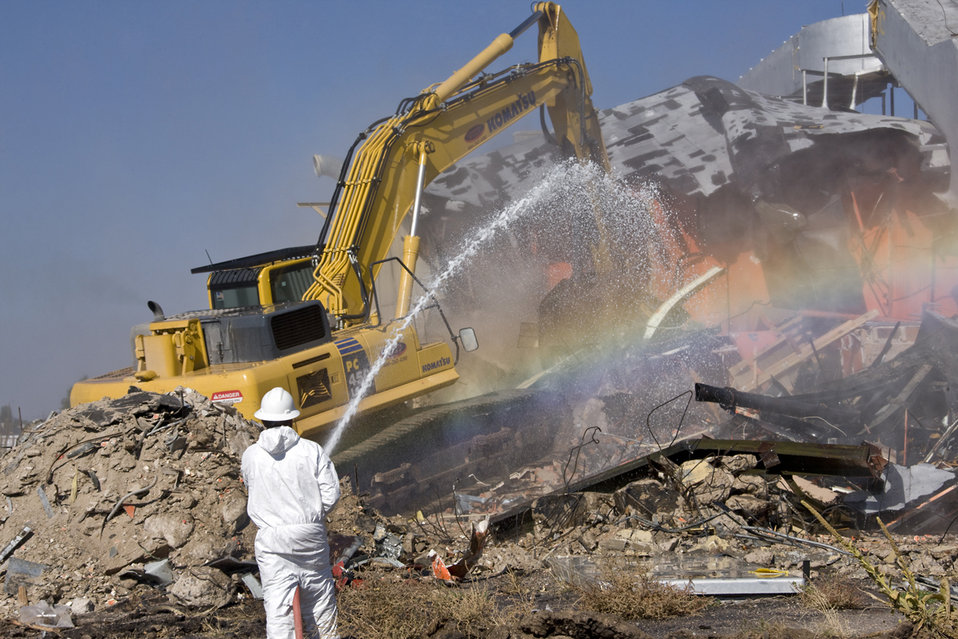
Environmental Management at Los Alamos National Laboratory

A worker suppresses dust during the final demolition stages of the historic DP West site, located at Los Alamos National Laboratory’s (LANL) Technical Area 21. The demolition was funded by the American Recovery and Reinvestment Act (ARRA) and is part of $212 million in ARRA funds the Lab received for environmental remediation.